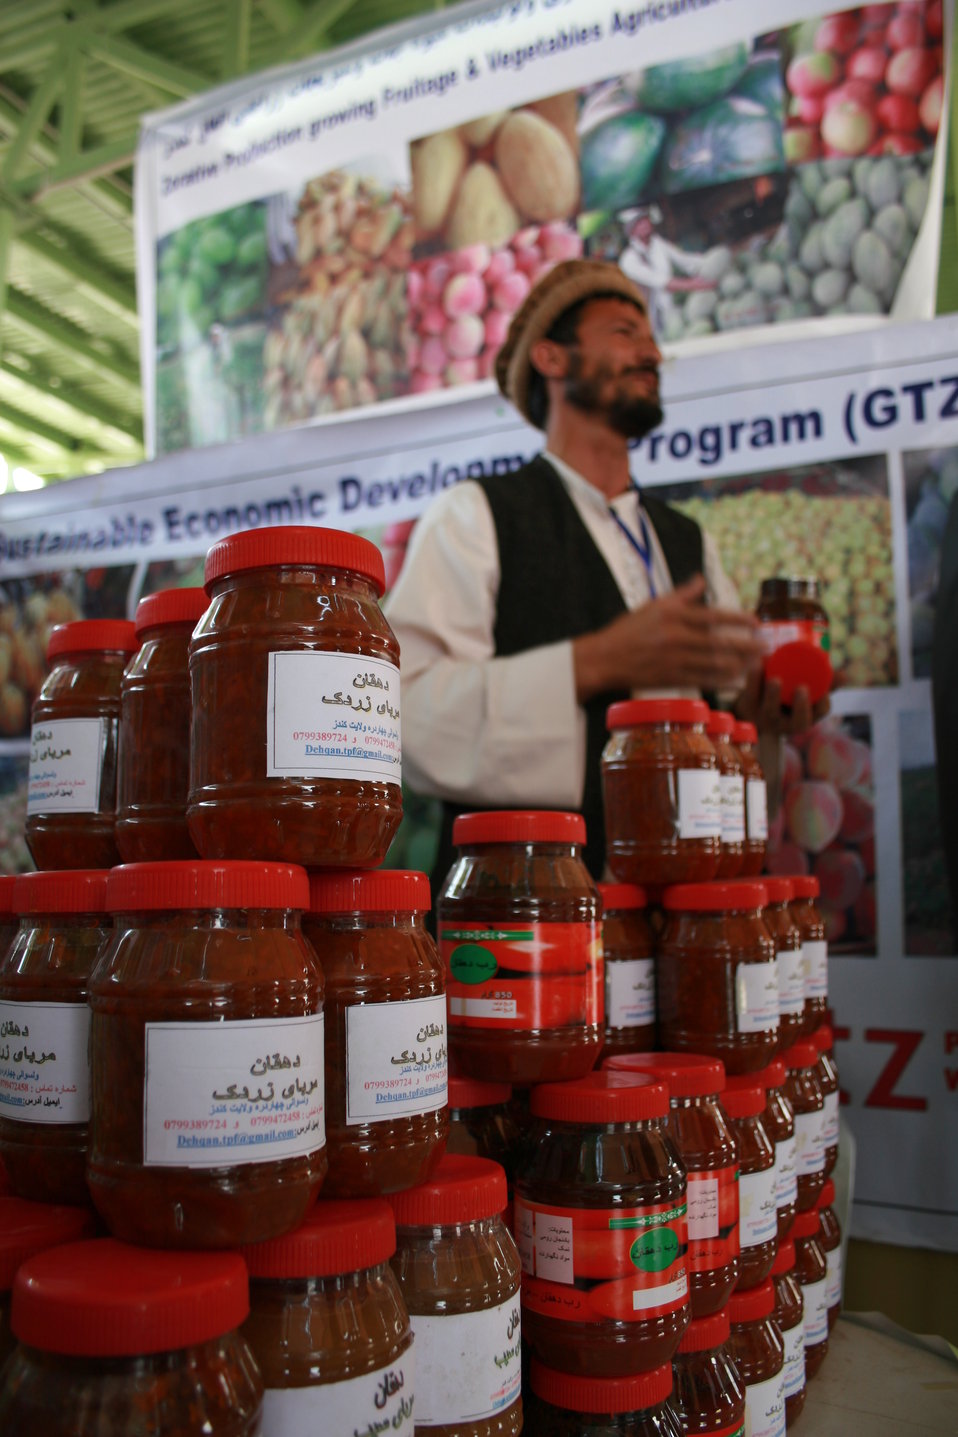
AgFair Tomato Paste May 20, 09

On May 20, 2009, Ambassador Eikenberry joined government officials, farmers, agribusiness representatives, and international investors at the launch of the Kabul International AgFair on May 20. Held at the Ministry of Agriculture, Irrigation and Livestock’s Badam Bagh Demonstration Farm in Kabul, the fair showcases Afghanistan’s wealth of fresh produce, provides lucrative business opportunities, and demonstrates innovative agricultural technologies. It is expected to attract more than 50,000 participants from May 21-22.

U.S. Ambassador Karl Eikenberry and Afghan Acting Minister of Agriculture, Irrigation and Livestock (MAIL) Saleem Kunduzi gave opening remarks at the AgFair’s launch. “The United States Government is co-sponsoring national and regional AgFairs like this one to encourage trade and generate business opportunities in the agriculture sector,” Ambassador Eikenberry said. “In a country that is 80 percent rural, promoting licit crops and agriculture sector job creation are two essential steps to successful development in the region.”

Member of Parliament Abdul Salam Qazizada offered bold remarks, stating that we need to engage more with farmers in every province throughout the country.

Following the ceremony, Ambassador Eikenberry visited a number of vendors at the fair with Acting Minister Kunduzi and Mr. Qazizada. In speaking with farmers displaying their produce, Ambassador Eikenberry found that many have increased yields due to USAID assistance, have found regional buyers for their produce, and were grateful for the opportunities that AgFair provides.

Ambassador Eikenberry also discussed the state of agriculture with Minister Kunduzi and Mr. Qazizada. They agreed that while some progress has been made, there is a great deal more work to be done. Ambassador Eikenberry reiterated from his speech that USDA Secretary Vilsack recently met with Minister Rahimi to discuss the U.S. commitment to agriculture development. In a message to the Afghan public, Secretary Vilsack stressed that the USG aims to play a leading role by bringing more agriculture experts to the provinces and supporting agriculture research such as the Badam Bagh Demonstration Farm. Additionally, he looks “forward to working together to increase agricultural productivity, which will result in more jobs throughout the entire value chain, and a better quality of life for the citizens of Afghanistan.”

The United States Government is proud to support Afghan agriculture. Since 2002, America has provided more than 1 billion dollars in assistance to agriculture and rural development. AgFairs like the one Ambassador Eikenberry visited creates awareness of Afghanistan’s expanding agricultural sector, promotes new agricultural technologies that increase productivity, and provides a forum to connect farmers to local and international buyers. These results will contribute to Afghanistan’s prosperity.

We are already seeing the results of these fairs. Since 2007, Afghanistan’s agricultural fairs have attracted more than 500,000 participants from across the nation and the world, generated millions of dollars in sales of the country’s high-value produce, and provided participants with a competitive edge in one of the fastest growing markets in Central Asia.

As Ambassador Eikenberry stated, “The word is out – with over 180 international businesses represented at this fair, it is obvious that Afghanistan has sparked the interest, and appetite, of the world.”